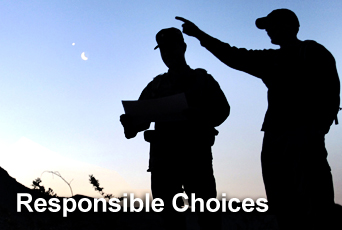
Airmen challenged to make better choices